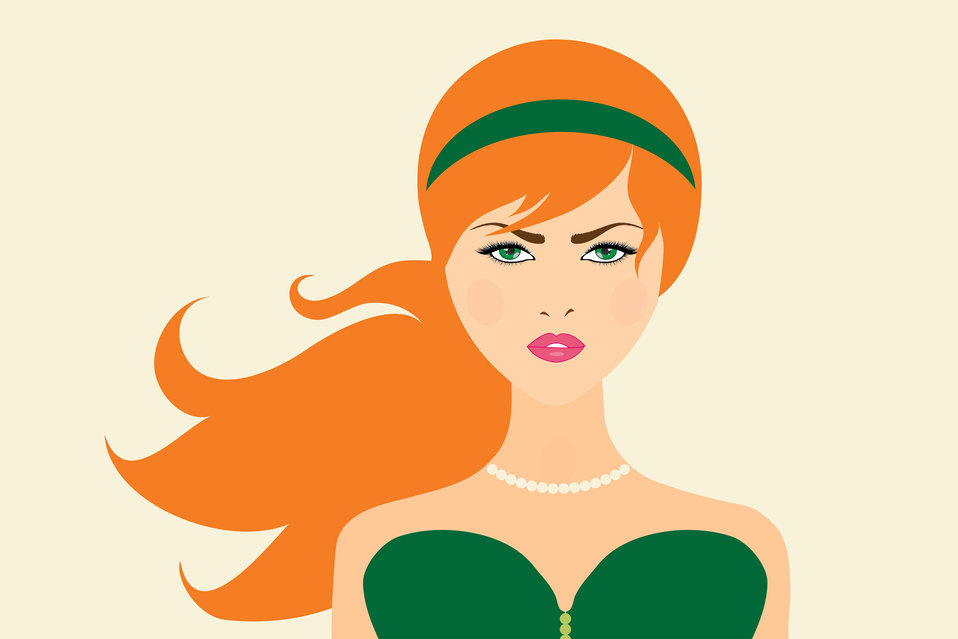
Beautiful girl red hair

Beautiful young woman with red hair illustration for scrapbooking.